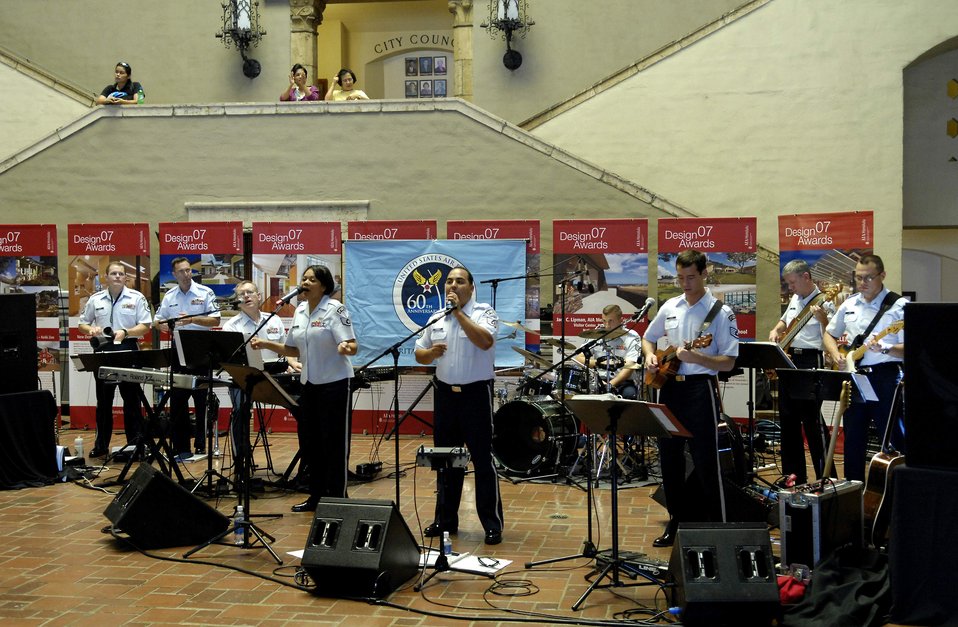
Air Force Week Honolulu kicks off

Members from the Air Force Band of the Pacific Hana Hou perform prior to the Air Force Week proclamation announcement Sept. 9 at the Honolulu Hale in Hawaii. Mufi Hannemann, mayor for the city and county of Honolulu, proclaimed Sept. 7 through 15 as Air Force Week in Honolulu.